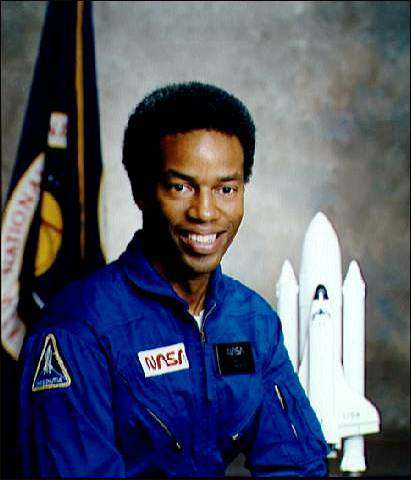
Colonel Guion S. Bluford Jr.

1970's -- Guion S. Bluford Jr. has the distinction of being the first African-American to be chosen as an NASA astronaut.